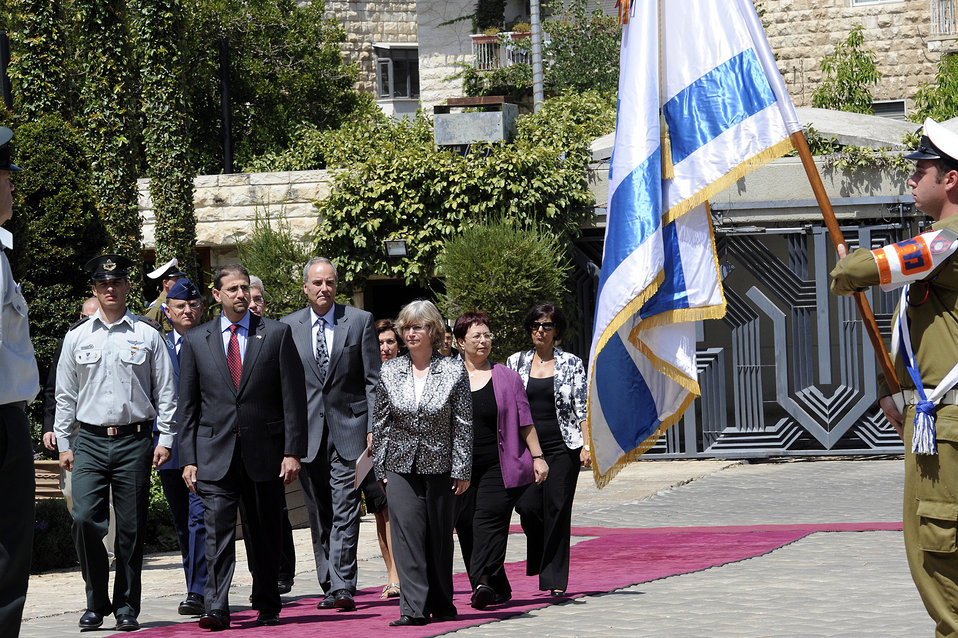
Ambassador Shaprio Prepares To Present His Credentials

U.S. Ambassador to Israel Daniel B. Shapiro prepares to present his credentials to Israeli President Shimon Peres at the President's residence in Jerusalem on August 3, 2011.